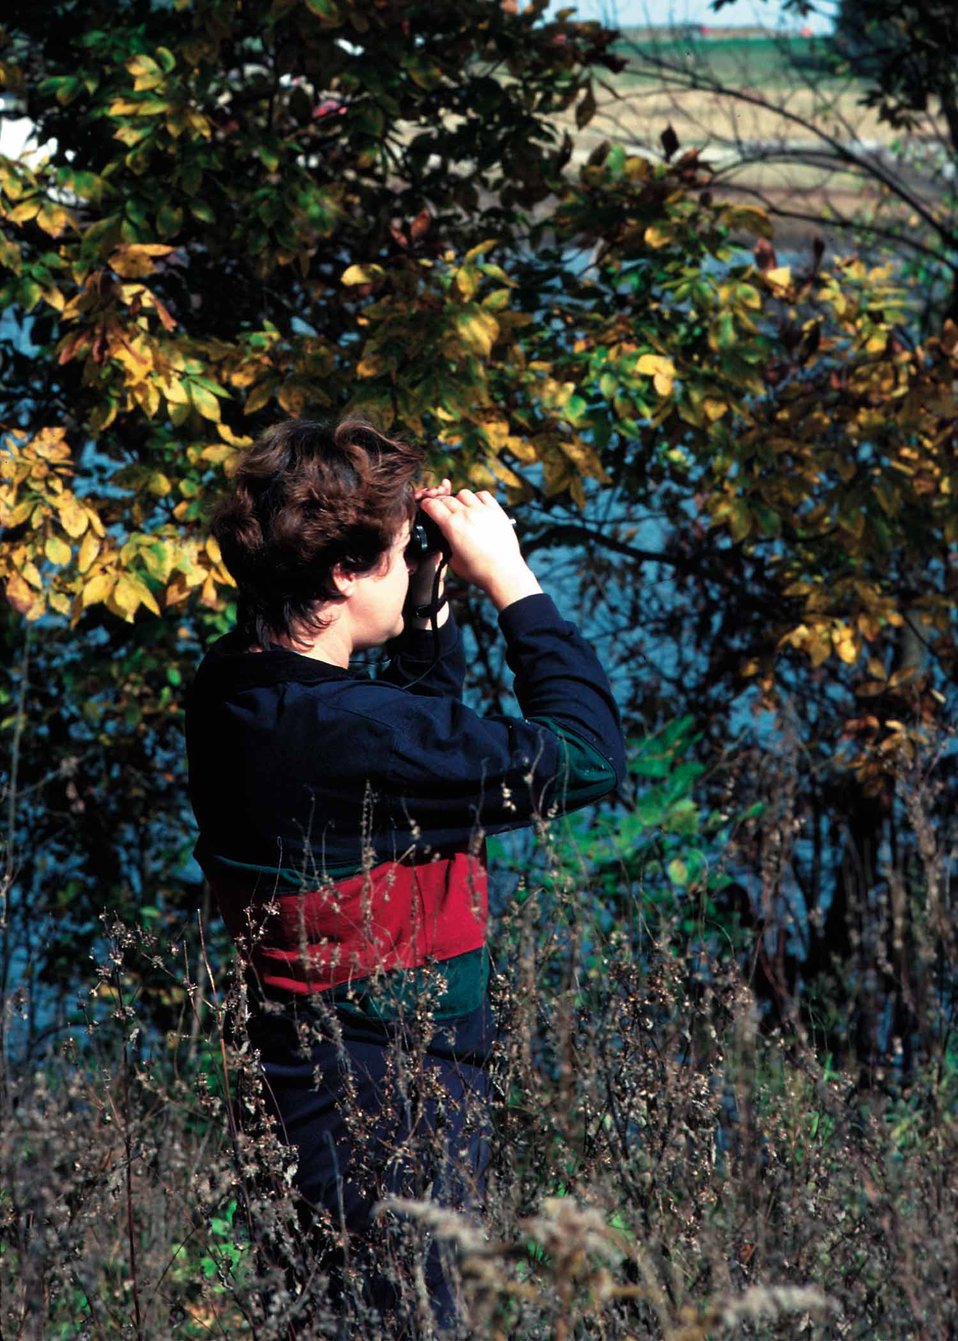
Birdwatching is one of the ways people enjoy the wildlife and recreation area surrounding Lake Sugema in the Van Buren-Indian Creek Watershed project. Lake Sugema, built as part of the watershed project, also provides a water supply, fishing and revenue from recreation for the local economy.